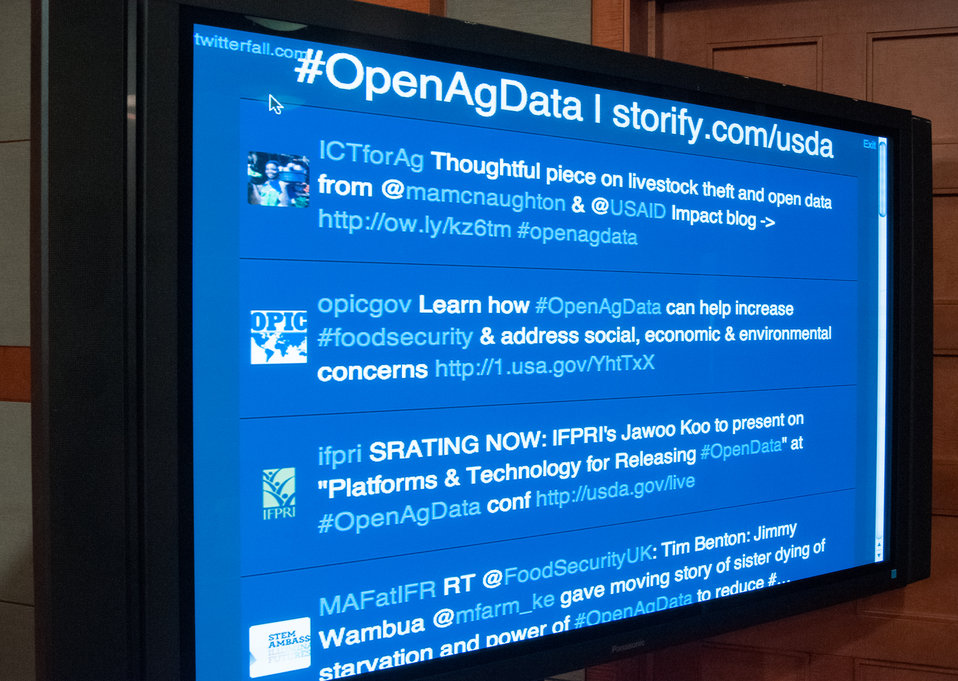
Attendants at the G-8 International Conference on Open Data for Agriculture in Washington, D.C. held on Tuesday, Apr. 30, 2013 were able to view live Twitter feeds via a monitor in the auditorium. The conference launched a new 'virtual community' of Food, Agriculture, and Rural data on Data.gov-the U.S. Government's data sharing website-to catalogue America's publicly available agricultural data and increase the ability of the public to find, download, and use datasets that are generated and held by the Federal Government. The data community features a collection of more than 300 newly cataloged datasets, databases, and raw data sources related to food, agriculture, and rural issues from agencies across the U.S. Government. In addition to the data catalog, the virtual community shares a number of applications, maps and tools designed to help farmers, scientists and policymakers improve global food security and nutrition.